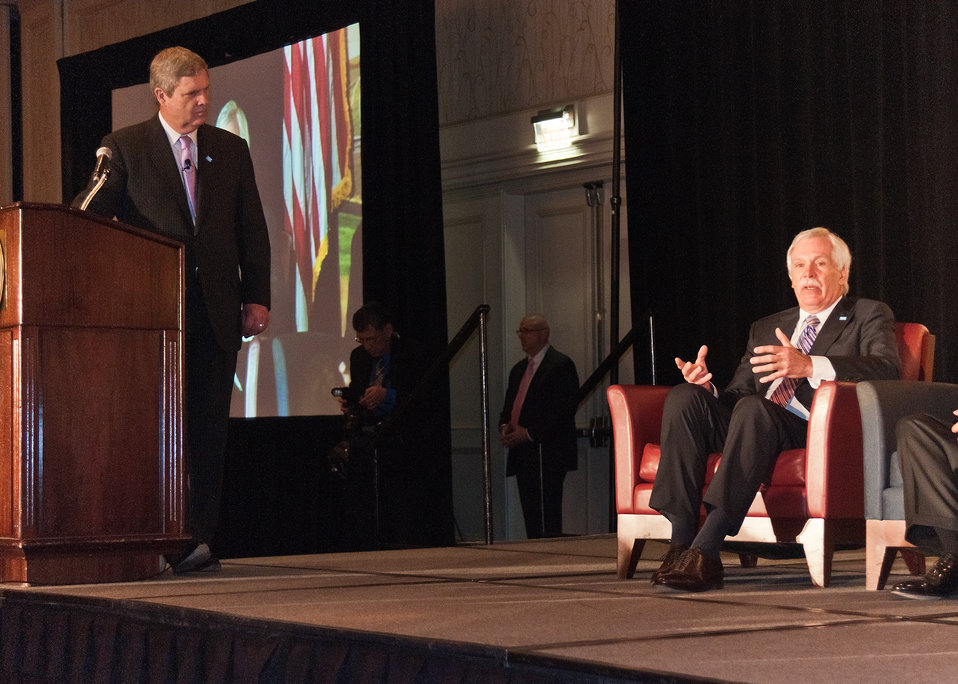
At the 2012 Agricultural Outlook Forum, “Moving Agriculture Forward” in Arlington, VA, held on Thursday, February 23, 2012, 7 former Secretaries of Agriculture sat on the plenary panel “Visions of the Future” hosted by current Agriculture Secretary Tom Vilsack. Governor Ed Schafer (ND) (seated) speaks out during the panel discussions as Secretary Vilsack (standing) listens.